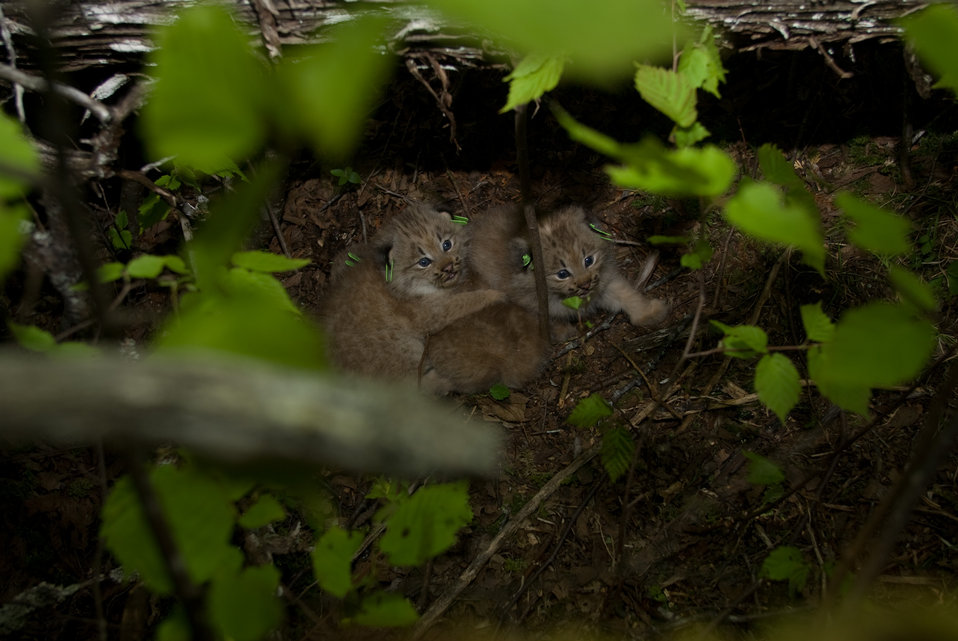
Canada Lynx kittens replaced into their den

After documentation is complete, the kittens are placed back into their den. Shortly after the departure of the team, the mother lynx will return to her kittens. As seen here, the habitat of a lynx den is often located in thick growth and within structures of uprooted and fallen trees.